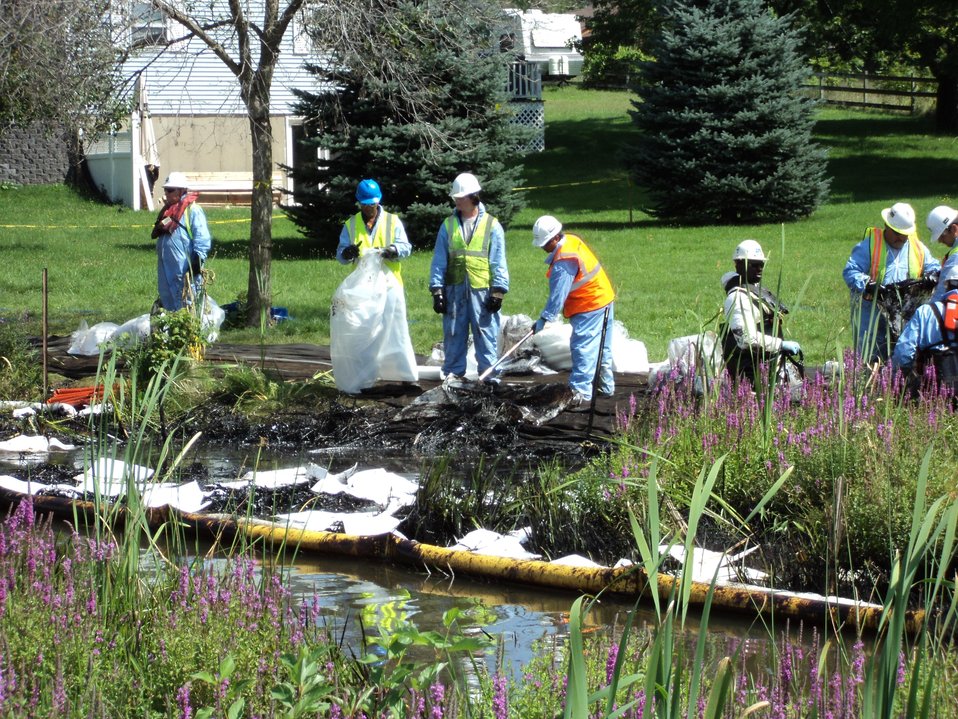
Talmadge Creek bank oil removal

Cleanup crews remove oil and contaminated materials from the Talmadge Creek stream bank near Marshall, Michigan.